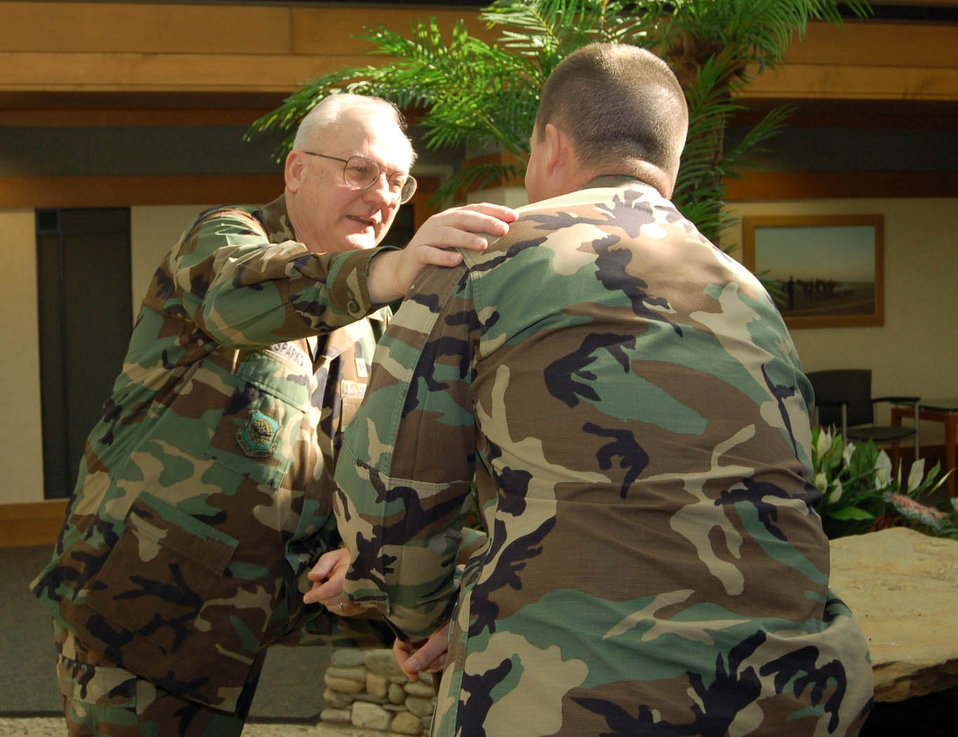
The life of a port mortuary chaplain

Chaplain (retired Lt. Col.) David Sparks counsels a fellow port mortuary team member at the Air Force Mortuary Affairs Operations Center at Dover Air Force Base, Del. Chaplain Sparks has been on staff here for more than five years.